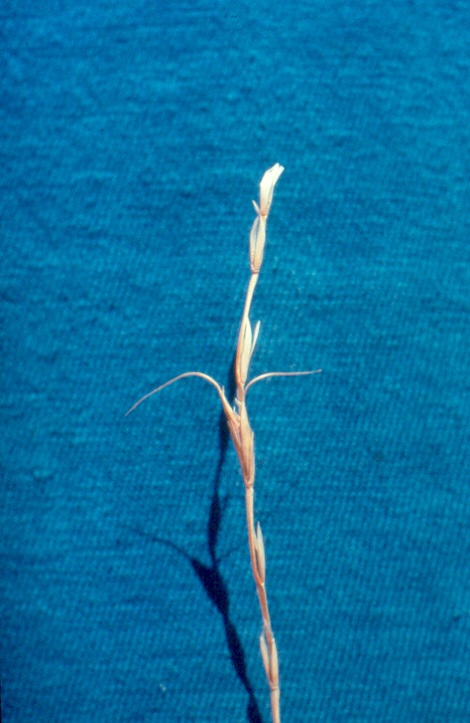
Blue Bunch Wheat Grass Seed Salmon FIeld Office UCSC Upper Columbia Salmon Clearwater District